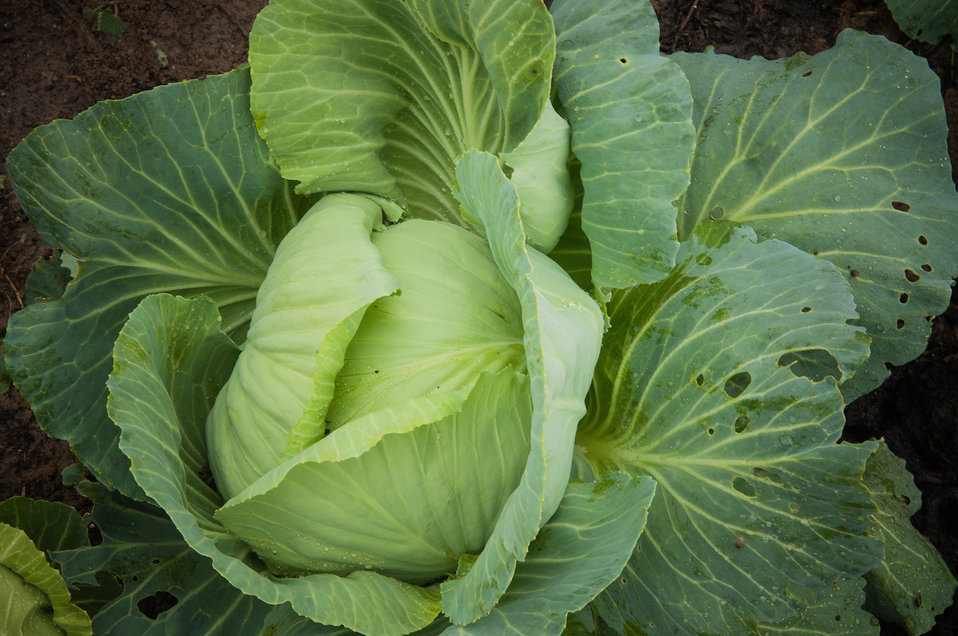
Cabbage, one of the most nutrient dense vegetables, grows in a high tunnel house at the East Arkansas Enterprise Community, (EAEC) Inc. in Forrest City, AR on Mar. 4, 2013. The EAEC is one of 42 community-based organizations located in high poverty areas in the U.S. to benefit from the Arkansas Delta Seeds of Change (ADSOC) Initiative. The U.S. Department of Agriculture (USDA) in partnership with Heifer International (an International organization whose mission is to work with communities to end hunger and poverty and care for the Earth) and various for-profit and non-profit organizations have organized the Seeds of Change Implementation Plan to use sustainable agriculture to build food systems in the Arkansas Delta.